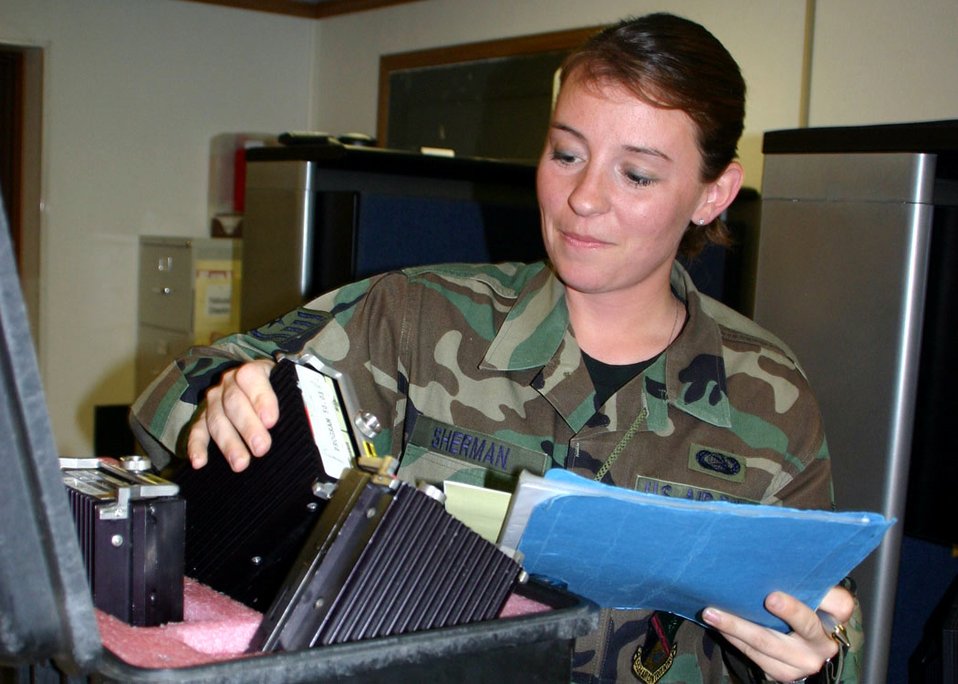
Kit check-in

Staff Sgt. Jamie Sherman inspects a mission software kit at Tinker Air Force Base, Okla. Squadron Airmen build and issue kits which drive the E-3 Sentry computer and radar system to AWACS aircrews for use during missions, then store and save the information recorded for future viewing. Sergeant Sherman is with the 752nd Communications Squadron